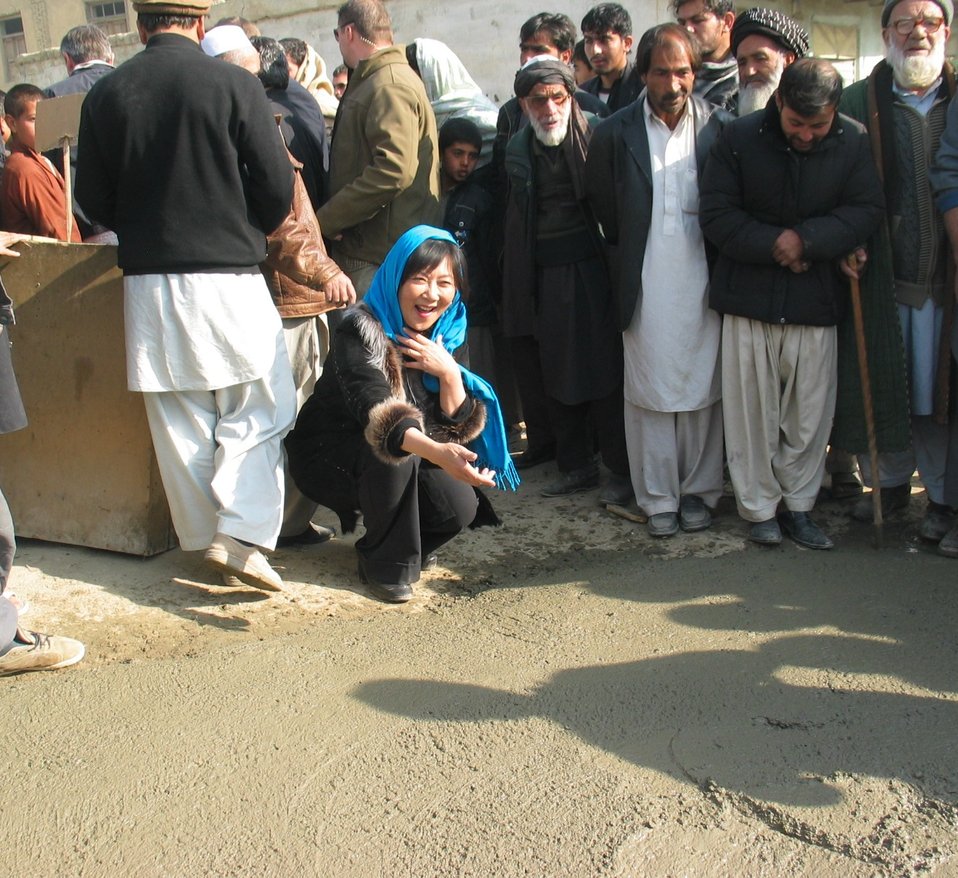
Kabul River Bridge Renovation, December 3, 2010